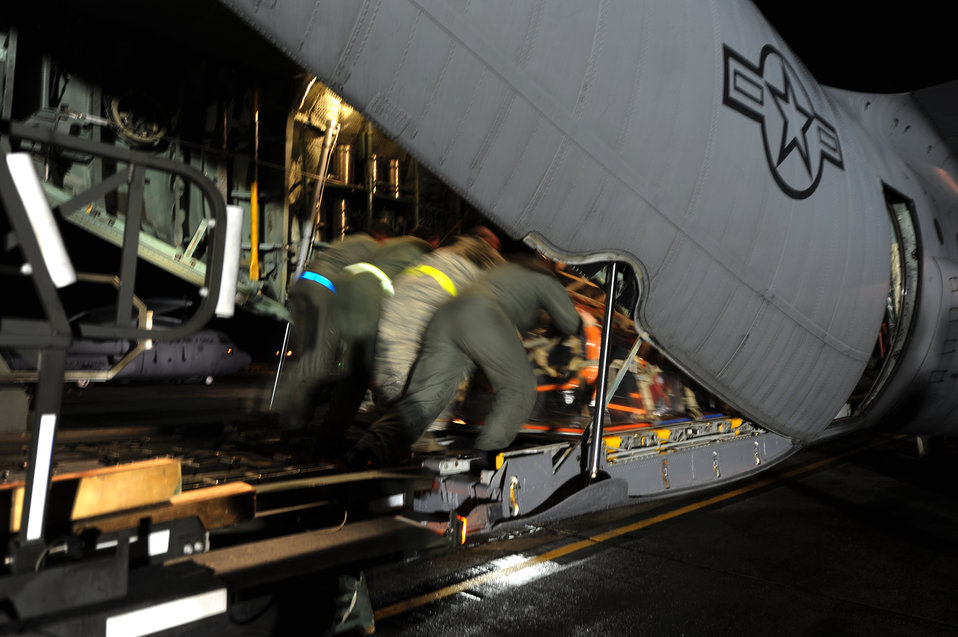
Puerto Rico ANG supports Haiti earthquake relief

Airmen from the Puerto Rico Air National Guard's 156th Airlift Wing load one of the unit's C-130E Hercules aircraft with search and rescue equipment that was bound for Haiti along with a team of Puerto Rican search and rescue workers Jan. 16 at Munoz Air National Guard Base, P.R. In the first week after the earthquake devastated the island nation of Haiti, the 156 AW transported more than 117 tons of cargo and 294 passengers and evacuated 70 United States citizens.